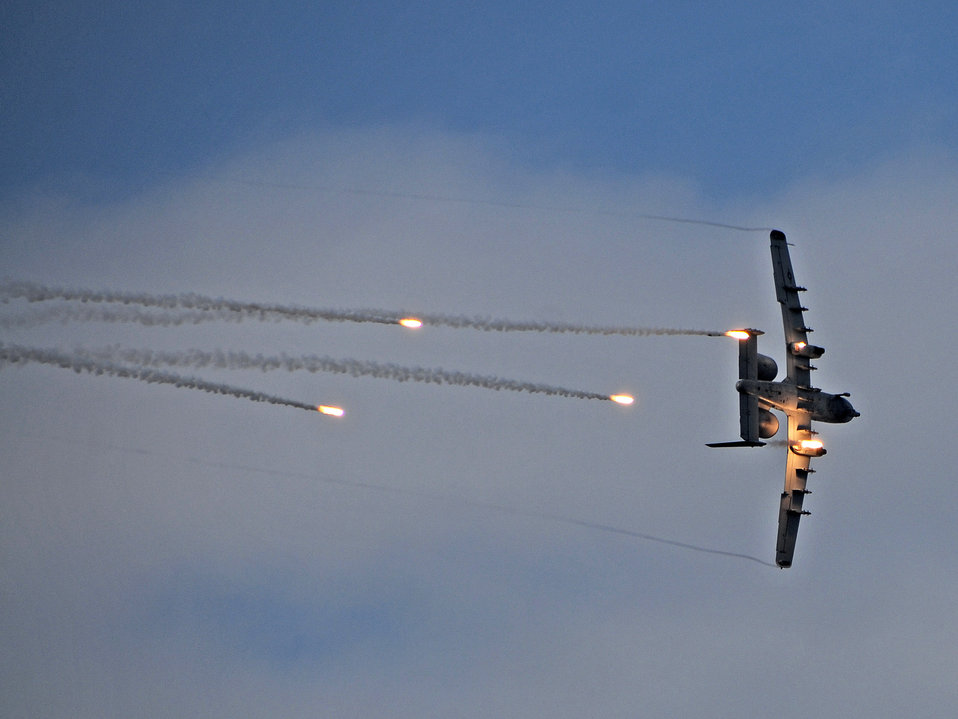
Airpower Summary for March 28: A-10s demonstrate coalition power

An Air Force A-10 Thunderbolt II, like the one shown here, flew a show of force March 28, expending a number of flares, to deter an enemy force attack while providing overwatch for a coalition medical evacuation by helicopter.